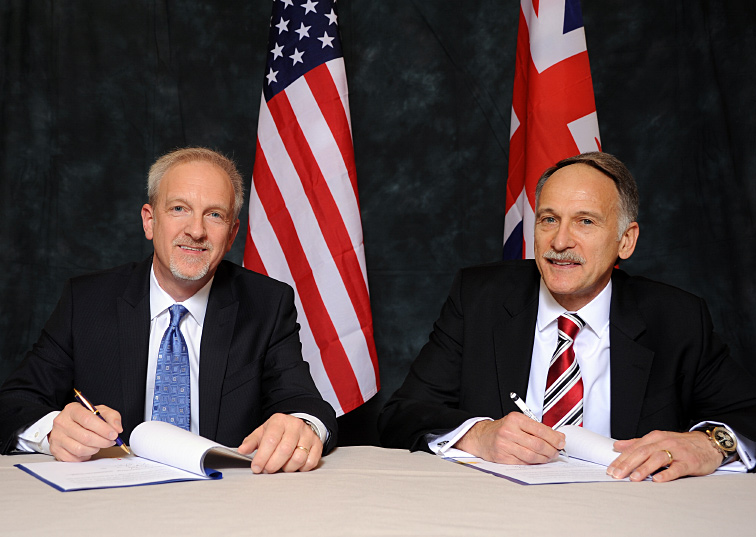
EM Renews Agreement with United Kingdom’s Nuclear Decommissioning Authority

EM’s top official this week renewed an agreement between DOE and the U.K.’s Nuclear Decommissioning Authority (NDA) that expands their scope of information sharing.

DOE Senior Advisor for Environmental Management David Huizenga signed the Statement of Intent (SOI), which allows DOE and NDA to share lessons learned as well as the development and application of new technologies and approaches to improve the safety, cost effectiveness and schedule of EM’s nuclear cleanup program. The SOI was originally signed in 2007.